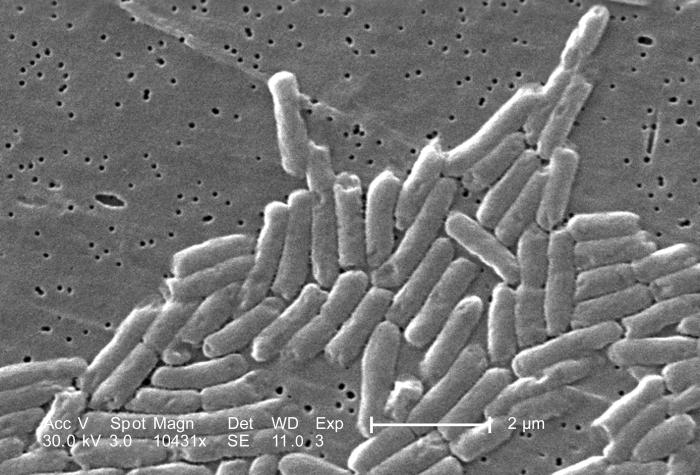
Under a high magnification of 10431X, half that of PHIL 10566, this scanning electron micrograph (SEM) revealed a colony of Gram-negative bacilli, or rod-shaped Salmonella sp. bacteria. The genus Salmonella is a member of the taxonomic family, Enterobacteriaceae, and approximately 2000 serotypes of this genis are known to cause disease in human beings.How do people catch Salmonella?